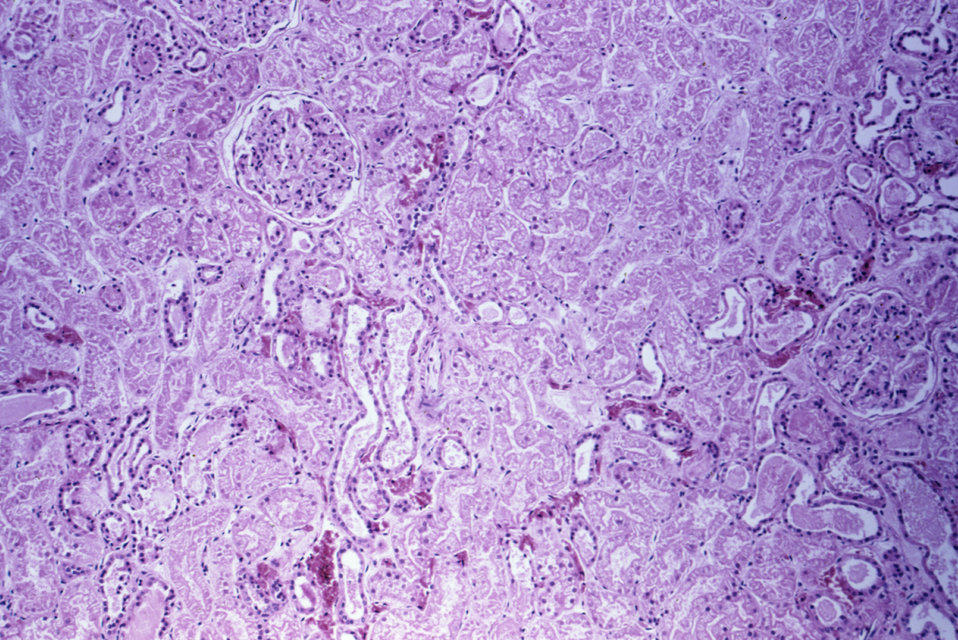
This photomicrograph revealed the cytoarchitectural histopathologic changes detected in a kidney sample taken from a Marburg patient (case #1) treated in Johannesburg, South Africa, 1975.